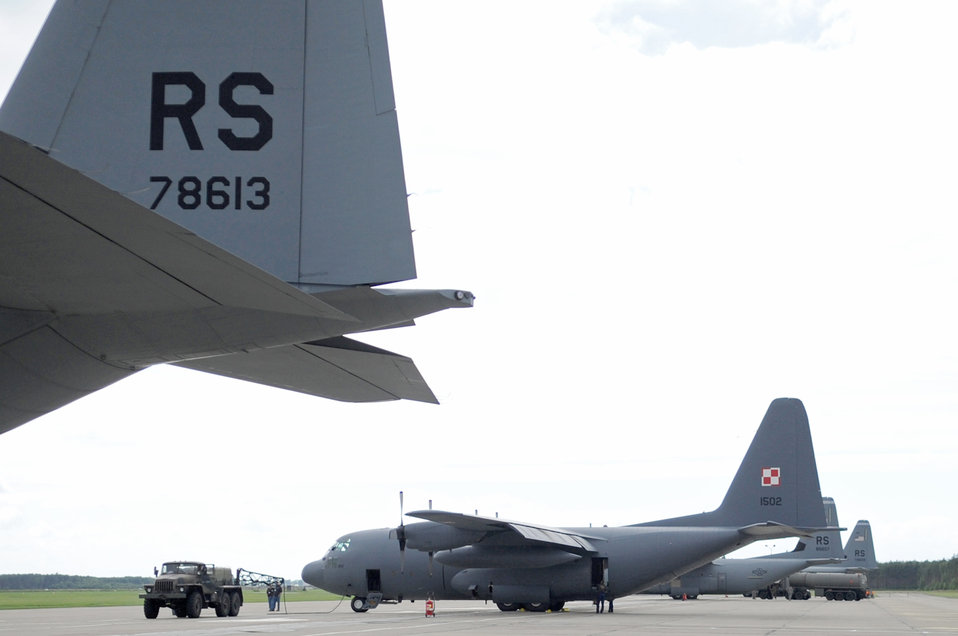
General Dillon's visit to Powidz Air Base in Poland

A U.S. Air Force C-130J and a Poland air force C-130E park on the flightline June 21, 2010 during a visit on Powidz Air Base, Poland.